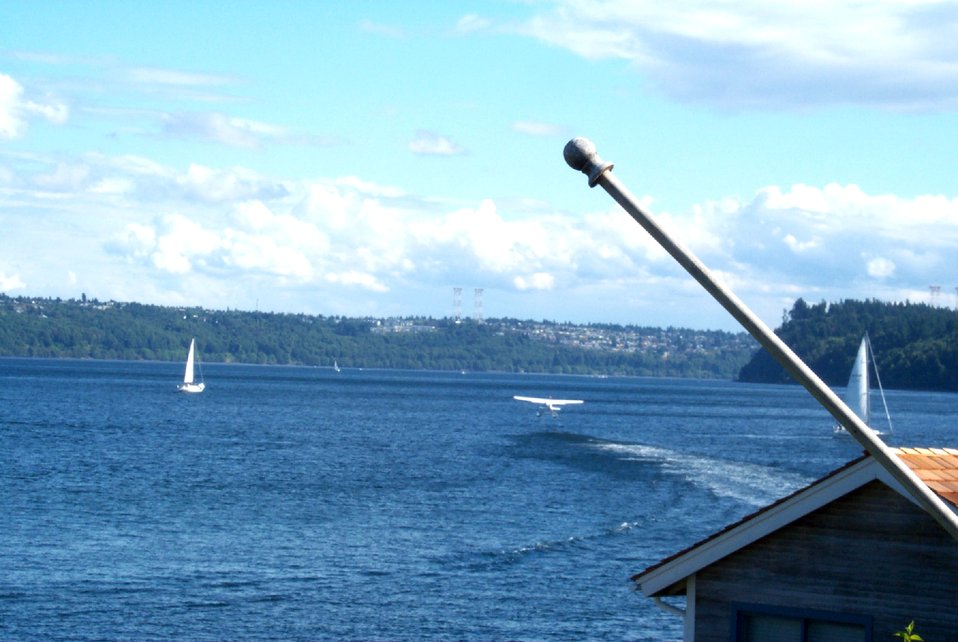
Seaplane departing Gig Harbor. A portion of Tacoma is visible in the background .